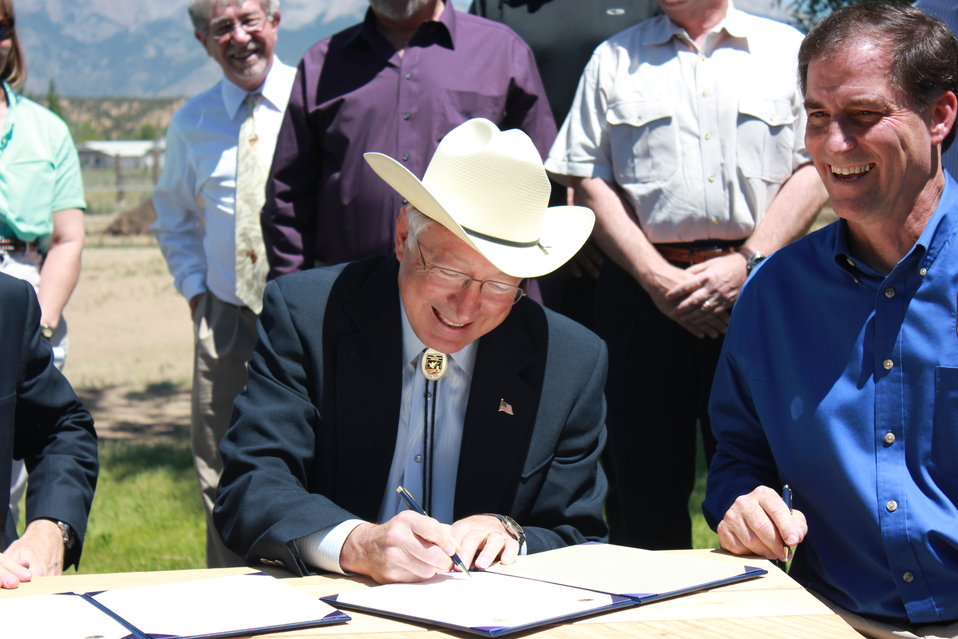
Historic Conservation Easement in Sangre de Cristo Mountains